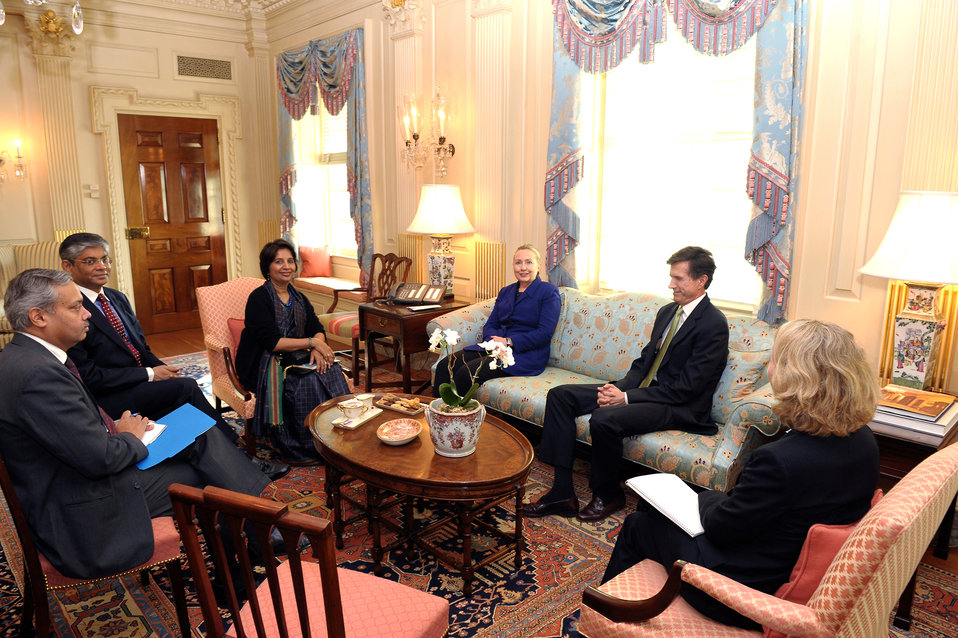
Secretary Clinton Meets With Indian Ambassador Rao

U.S. Secretary of State Hillary Rodham Clinton meets with Indian Ambassador to the U.S. Nirupama Rao at the U.S. Department of State in Washington, D.C., on January 25, 2012. Seated to the Secretary's left is Assistant Secretary of State for South and Central Asian Affairs Robert Blake.